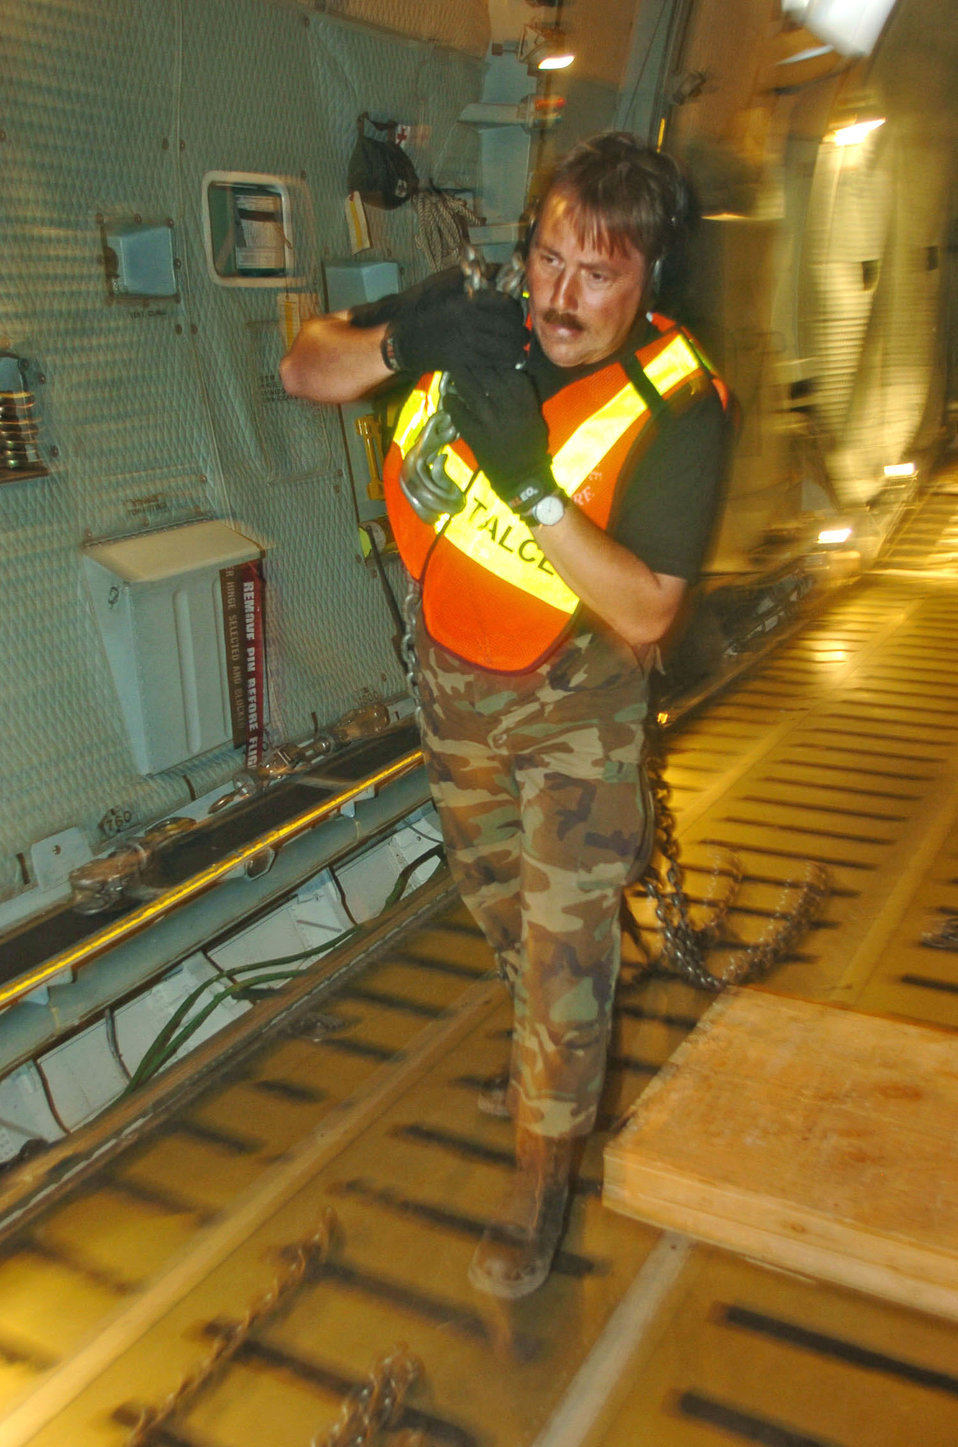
A Galaxy far, far away

BANDANAIKE, Sri Lanka -- Master Sgt. Jeff Wisley stows tie-down chains that restrained heavy equipment being delivered by a C-5 Galaxy aircraft. The aircraft, assigned to the 60th Airlift Wing at Travis Air Force Base, Calif., landed at the international airport here supporting Operation Unified Assistance. U.S. servicemembers are helping bring relief supplies and equipment to various locations in Sri Lanka. Sergeant Wisley is assigned to the Pacific Air Forces' tanker airlift control element at Yokota Air Base, Japan.